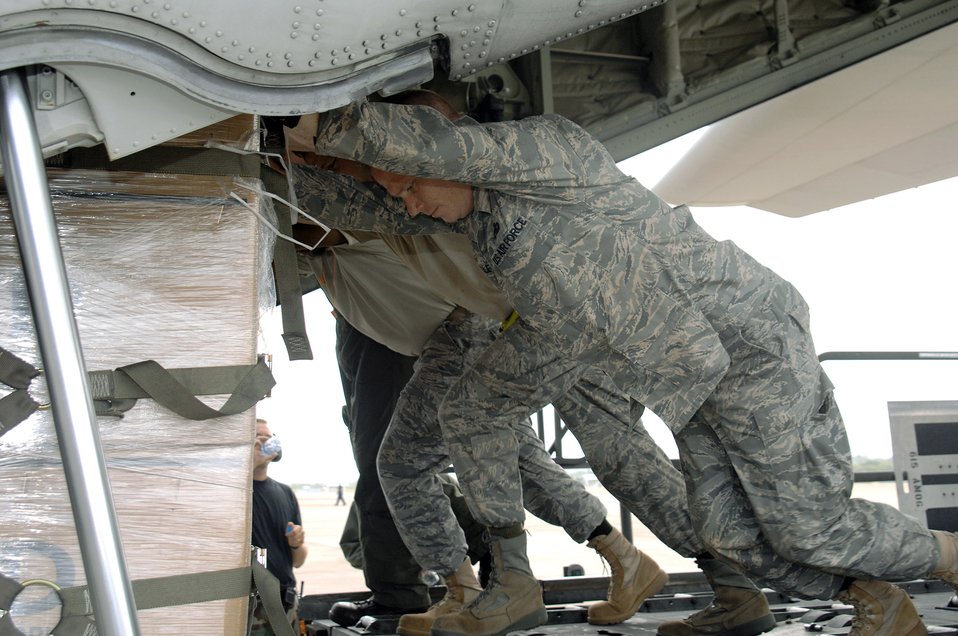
One more push

In support of relief efforts to Burma, Airmen from Andersen Air Force Base, Guam, load a U.S. Marine Corps C-130 with plastic tarp, blankets and water at Utapao Air Base, Thailand.